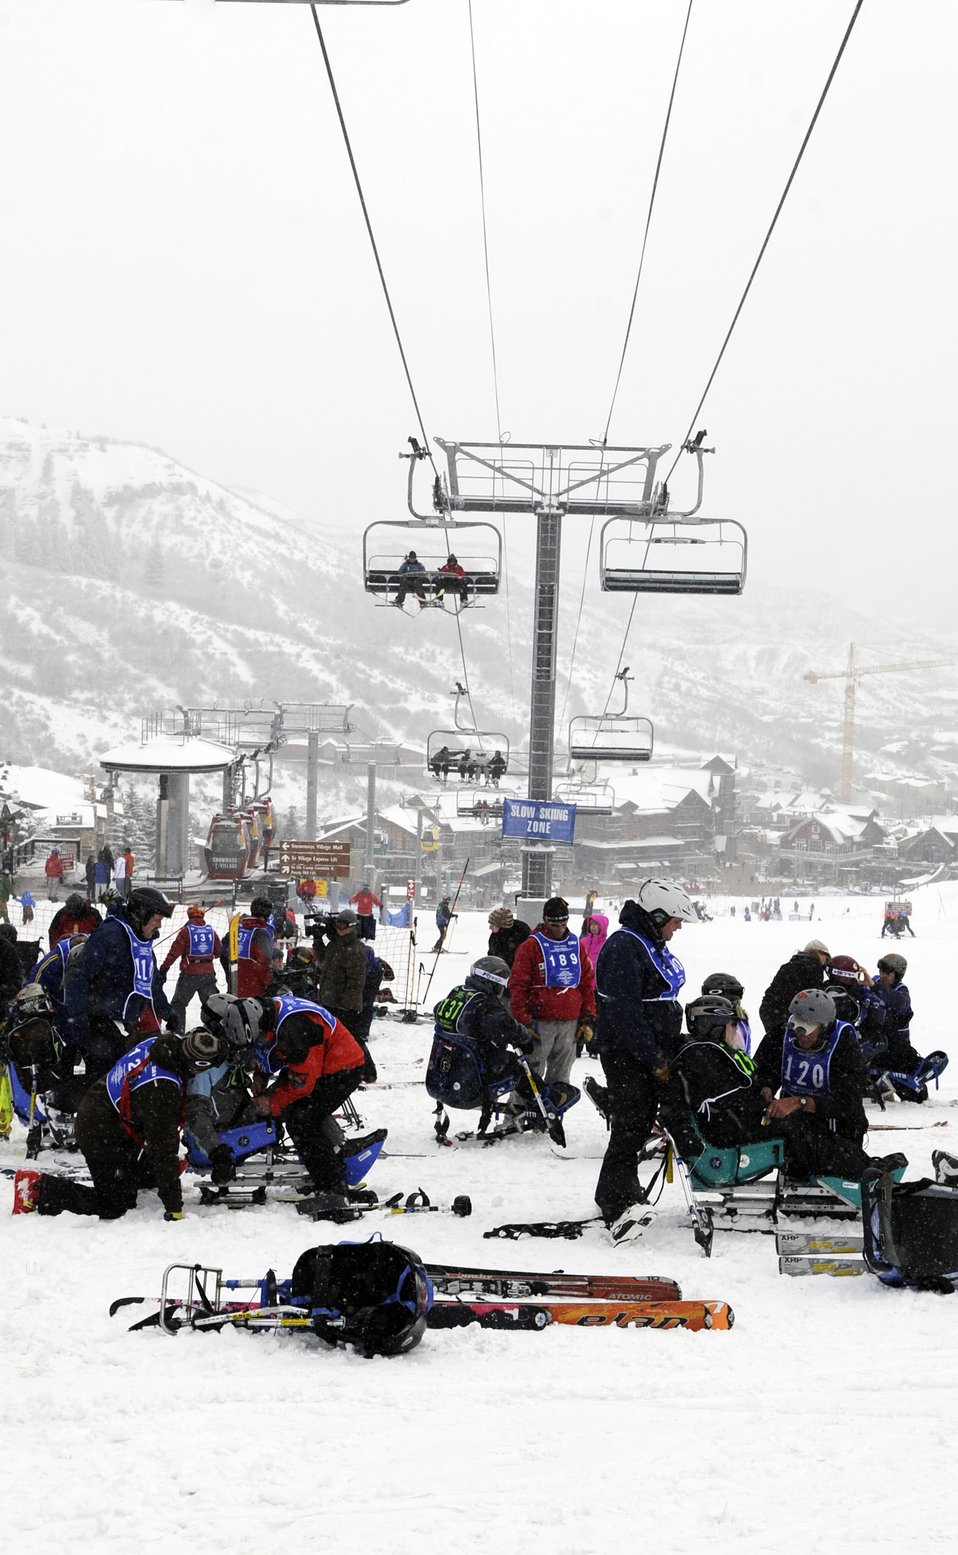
Luke Airmen assist disabled veterans at ski clinic

Veterans gear up to ski with the help of an instructor during the 23rd National Disabled Veterans Winter Sports Clinic held March 30 at the Snowmass Village, Colo. The annual disabled learn-to-ski clinic helps motivate and rehabilitate disabled Department of Defense veterans.